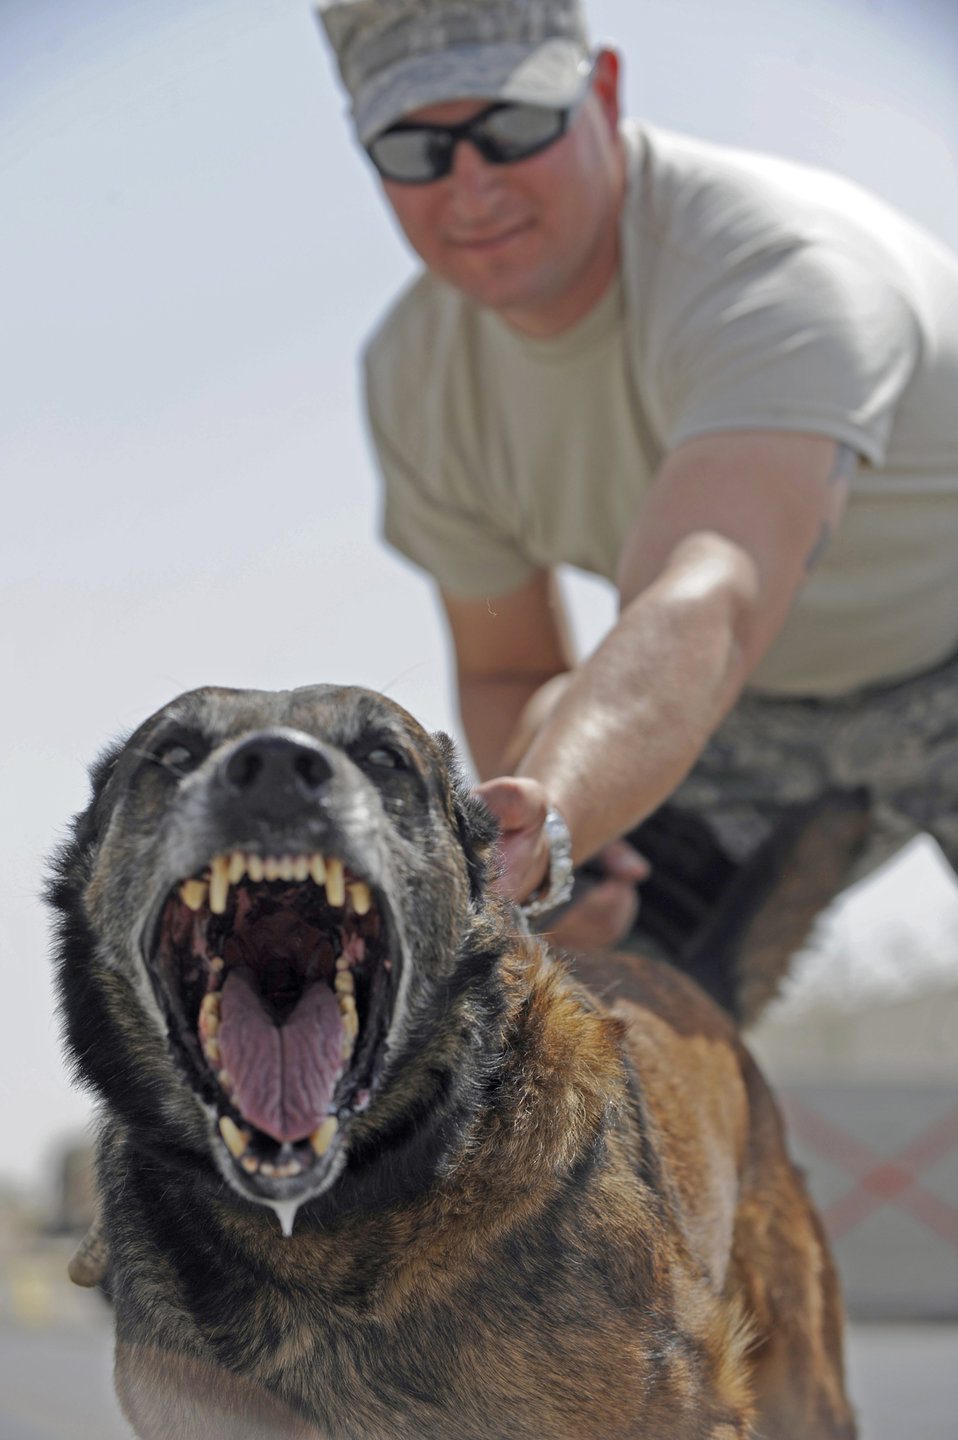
If you feel lucky, walk this way

Staff Sgt. John Coddington restrains Gizmo, a 12-year-old Belgian Malinois, at an air base in Southwest Asia Oct. 10, 2009. Sergeant Coddington and Gizmo are assigned to the 380th Expeditionary Security Forces Squadron, and deployed from Vandenberg Air Force Base, Calif.